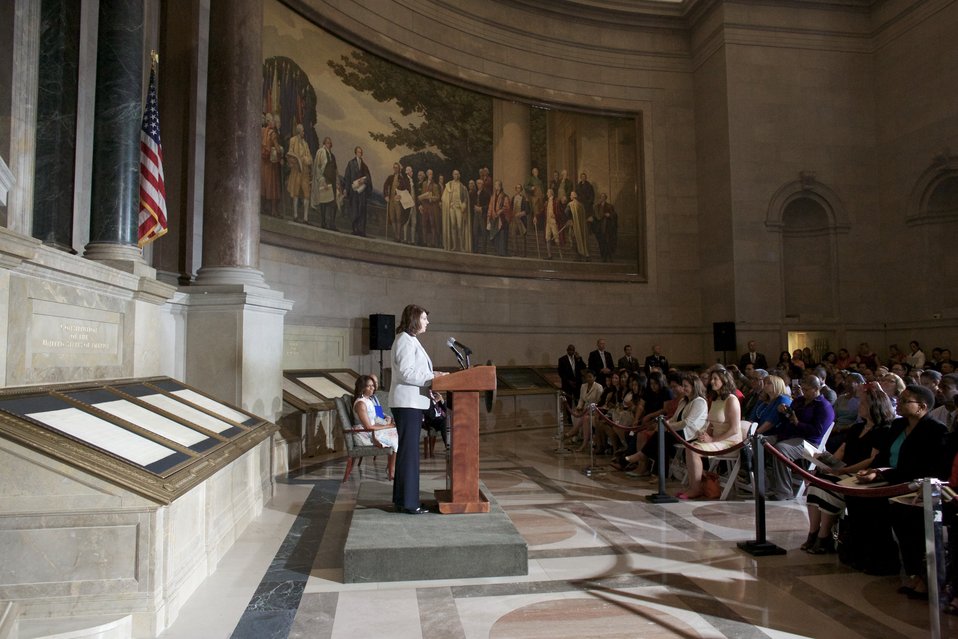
Naturalization Ceremony with Michelle Obama